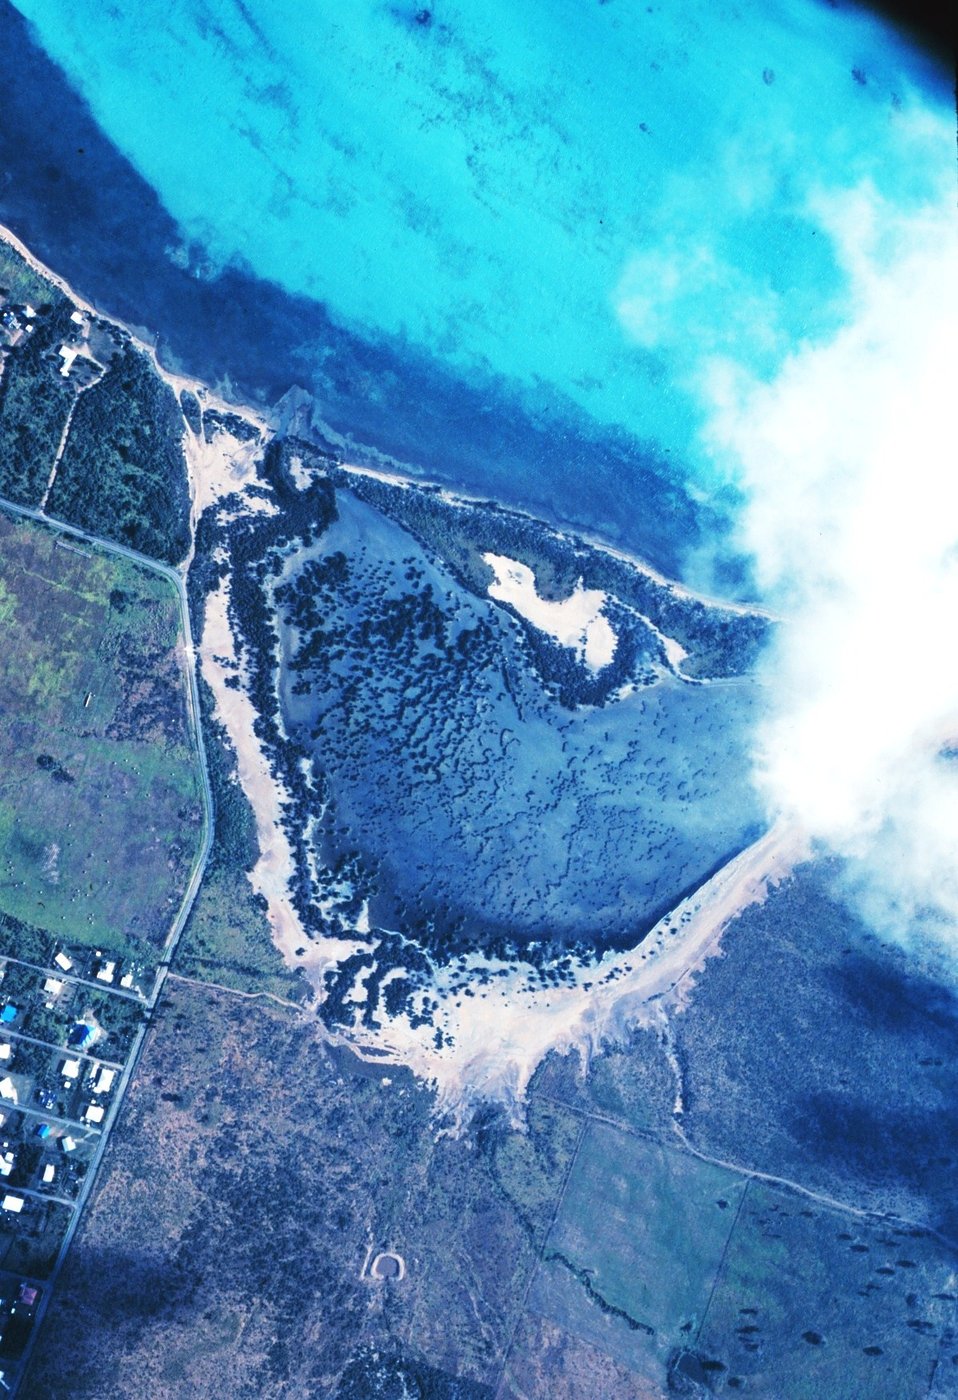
Great Pond Bay along the south coast of St. Croix.